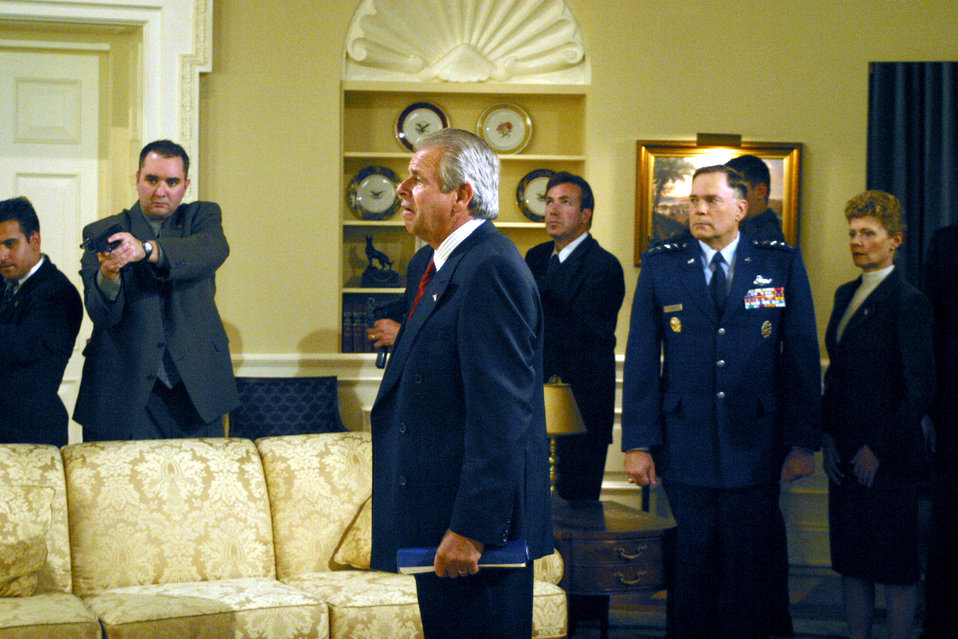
Acting lesson

VANCOUVER, British Columbia -- Air Force Chief of Staff Gen. John Jumper stars as himself here Aug. 26 on an upcoming episode of the Sci-Fi Channel's primetime television series